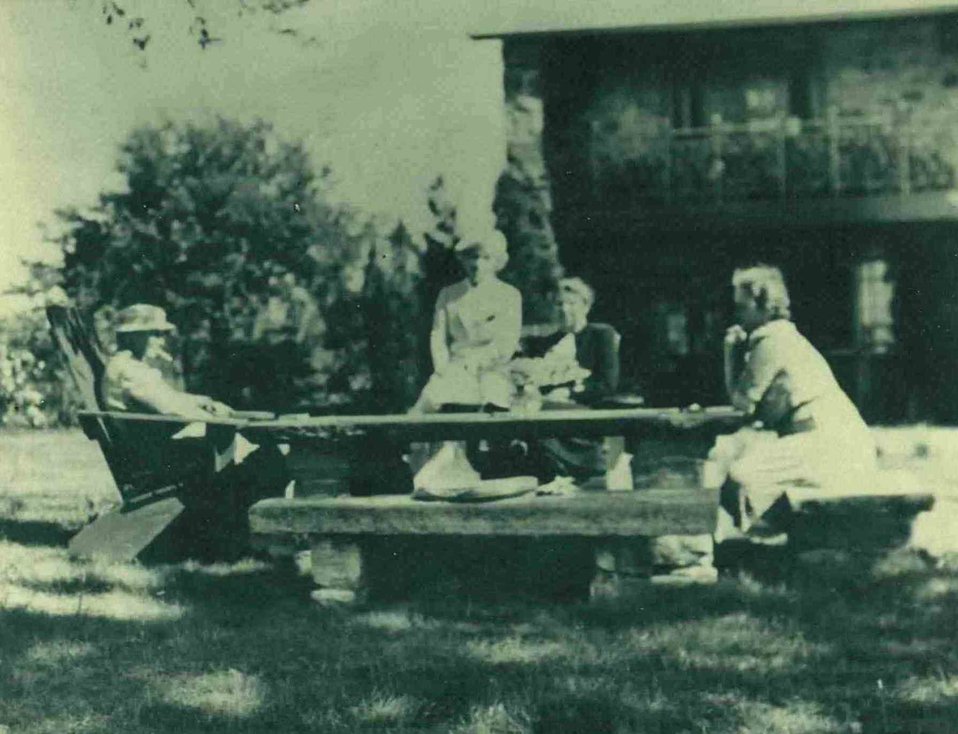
Read, Lape, Roosevelt and Thompson

Attorney Elizabeth Read, journalist Esther Lape, first lady Eleanor Roosevelt and Roosevelt aide Malvina Thompson, in front of the house Lape and Read built, now refuge headquarters at Stewart B. McKinney National Wildlife Refuge in Connecticut.